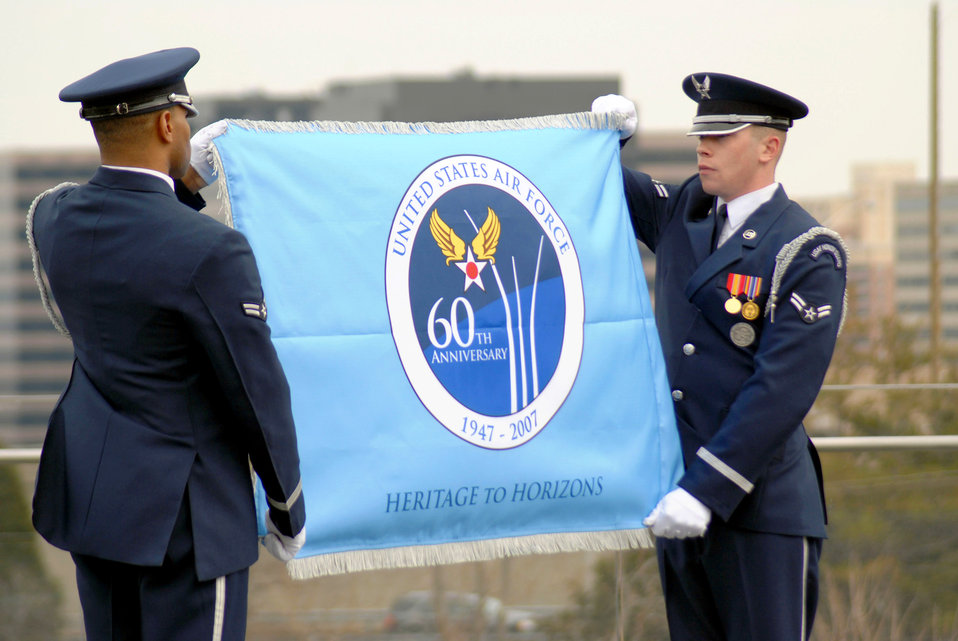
Air Force 60th Anniversary flag raised at memorial

Airmen 1st Class Ahmad Ware (left) and Brandon Bridges unveil the Air Force 60th Anniversary flag for the first time March 1 at the Air Force Memorial in Arlington, Va. The ceremony was attended by Chief of Staff of the Air Force Gen. T. Michael Moseley and Secretary of the Air Force Michael W. Wynn. The Airmen are Air Force Honor Guard ceremonial guardsmen.